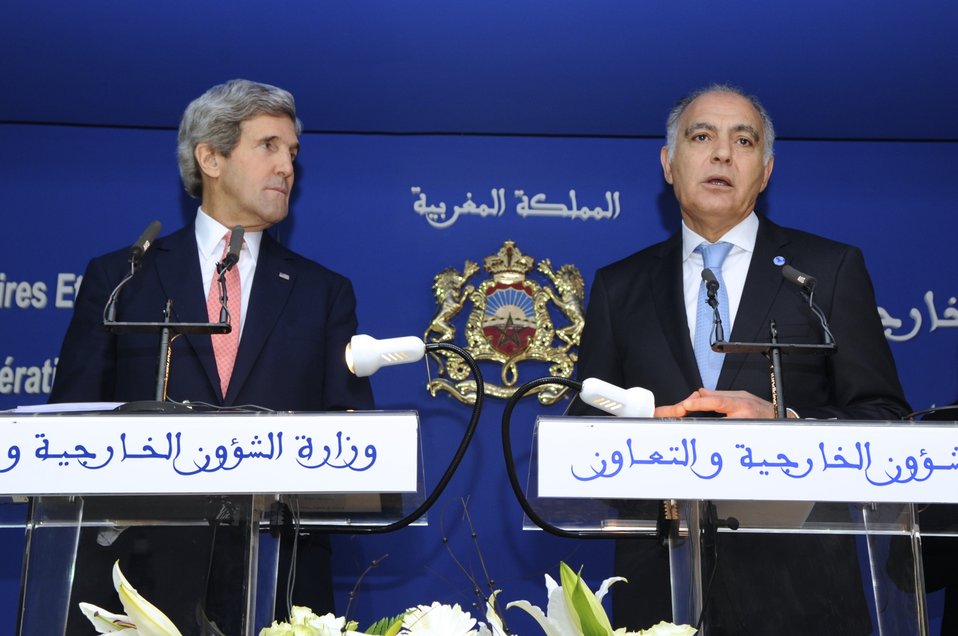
Moroccan Foreign Minister Addresses Reporters at Joint News Conference in Morocco

Moroccan Foreign Minister Salaheddine Mezouar answers a reporter's question during a joint news conference with U.S. Secretary of State John Kerry after a Strategic Dialogue between their two countries in Rabat, Morocco on April 4, 2014.